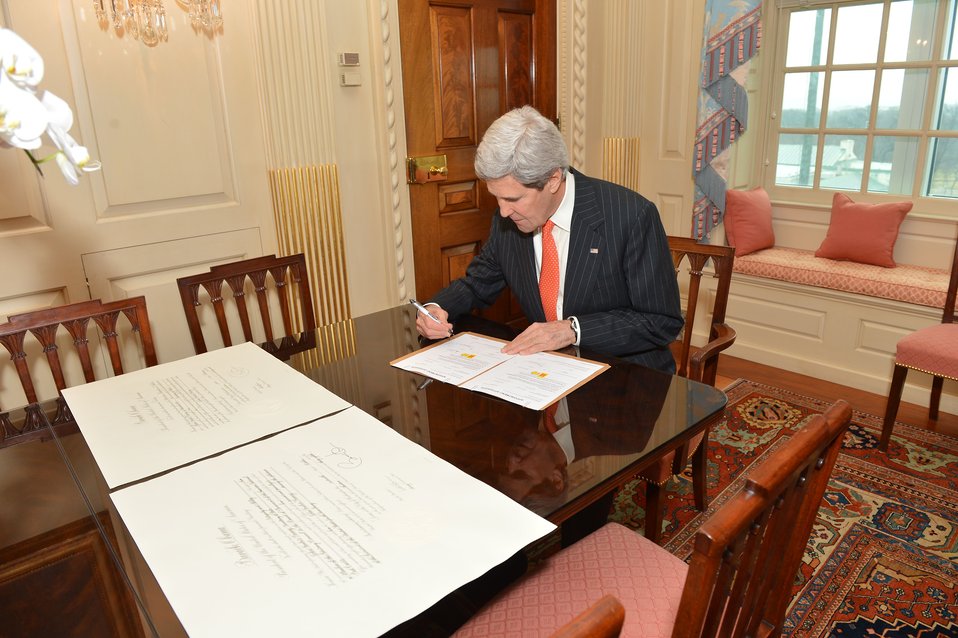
Secretary Kerry Signs Papers to Become a Member of the Advisory Council to the Board of Governors of the American National Red Cross

U.S. Secretary of State John Kerry signs his papers to become a member of the Advisory Council to the Board of Governors of the American National Red Cross, at the U.S. Department of State in Washington, D.C., on February 3, 2014.